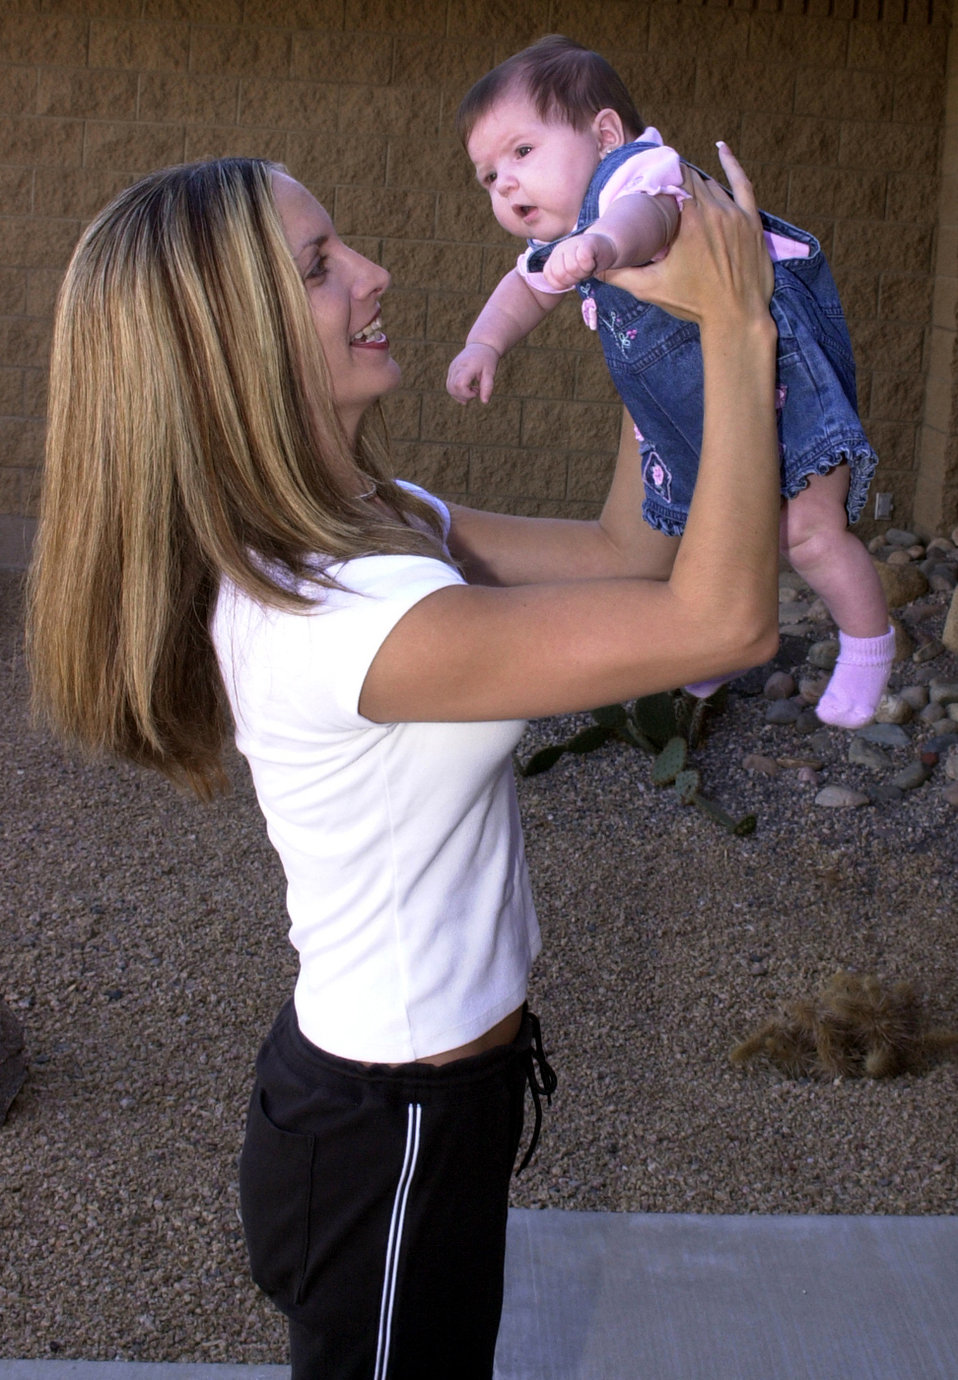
Workin' out with baby

LUKE AIR FORCE BASE, Ariz. -- Debbie Diveney lifts her daughter, Julianna, in an exercise called the